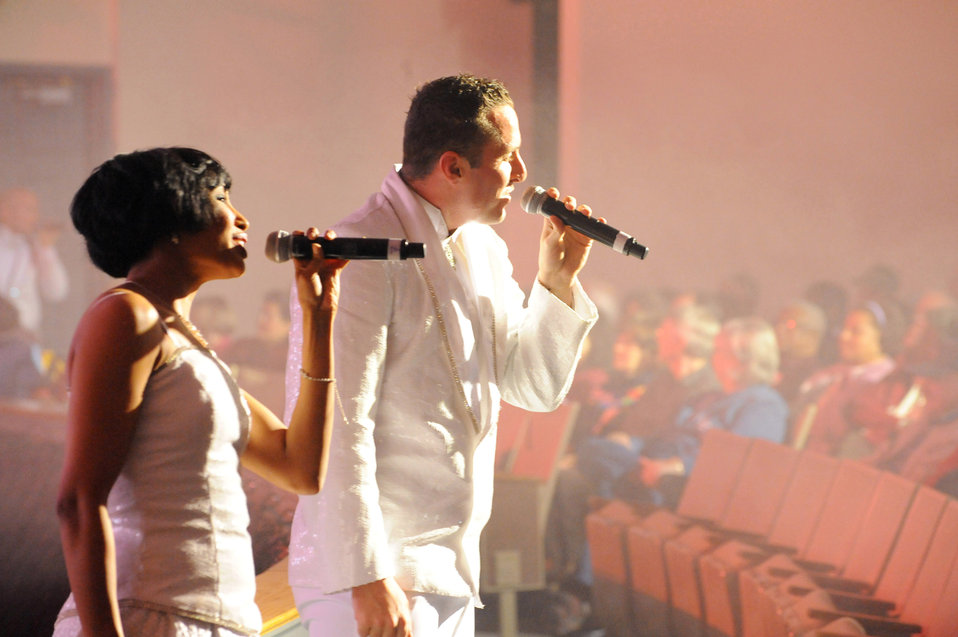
Life on the road with Tops In Blue

Staff Sgt. Aisha Smith (left) and Senior Airman Johnny Magbanua sing during a performance at the Patriot Hall Auditorium Feb. 3, 2010, in Sumter, S.C. Sergeant Smith and Airman Magbanua are members of Tops In Blue.